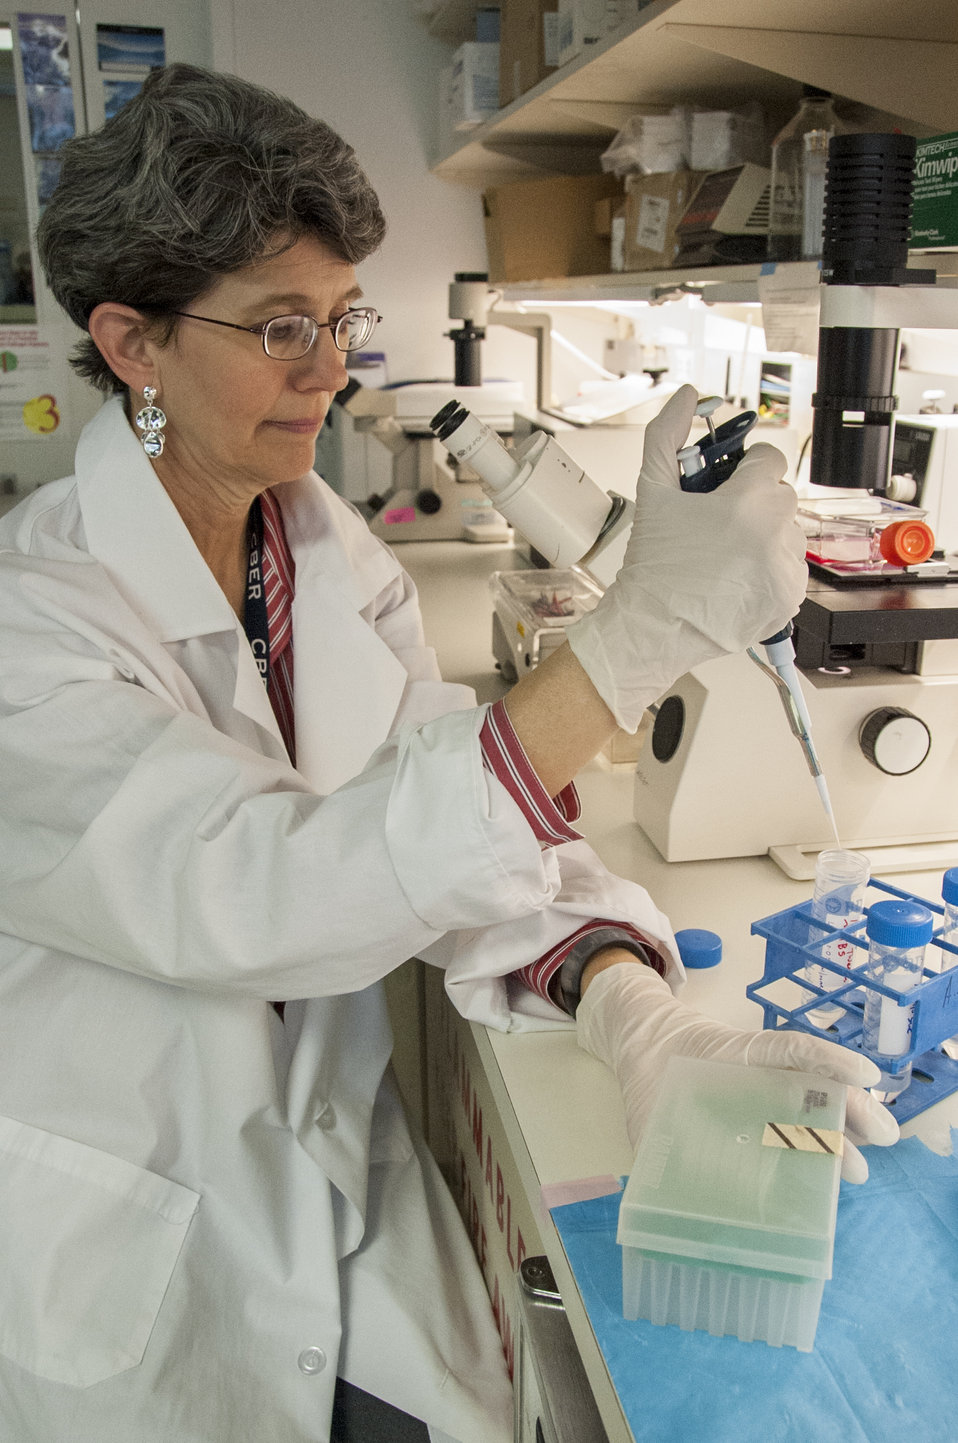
Bio Threats: FDA's A-Team (6361)

Carolyn Wilson, Ph.D., is associate director for research at FDA’s Center for Biologics Evaluation and Research. In her Bethesda, Md., laboratory, she researches the utility of pig cells, tissues and organs as materials for transplantation in humans.

Scientists at CBER work to facilitate the development of safe, effective treatments that would neutralize biological threats to public health and security. CBER regulates preventive and therapeutic vaccines, blood and blood products, human cell and tissue-based products, gene therapies and xenotransplantation. To learn more, read this FDA Consumer Update:

• FDA Teams Prepare for Biological Threats